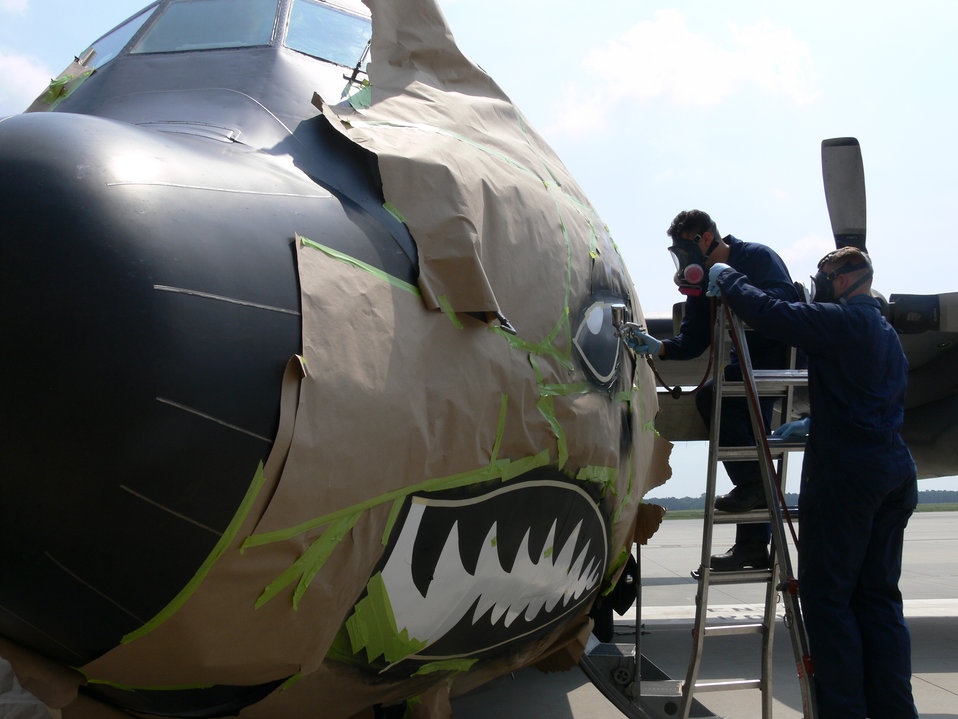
23rd 'Flying Tigers' to become host wing at Moody

Airmen 1st Class Ernesto Sosa and Nicholas Heimgartner paint the nose of a C-130E in August at Moody Air Force Base, Ga. The aircraft was repainted to represent the 347th Rescue Wing's upcoming transition to the 23rd Wing, known as the famous